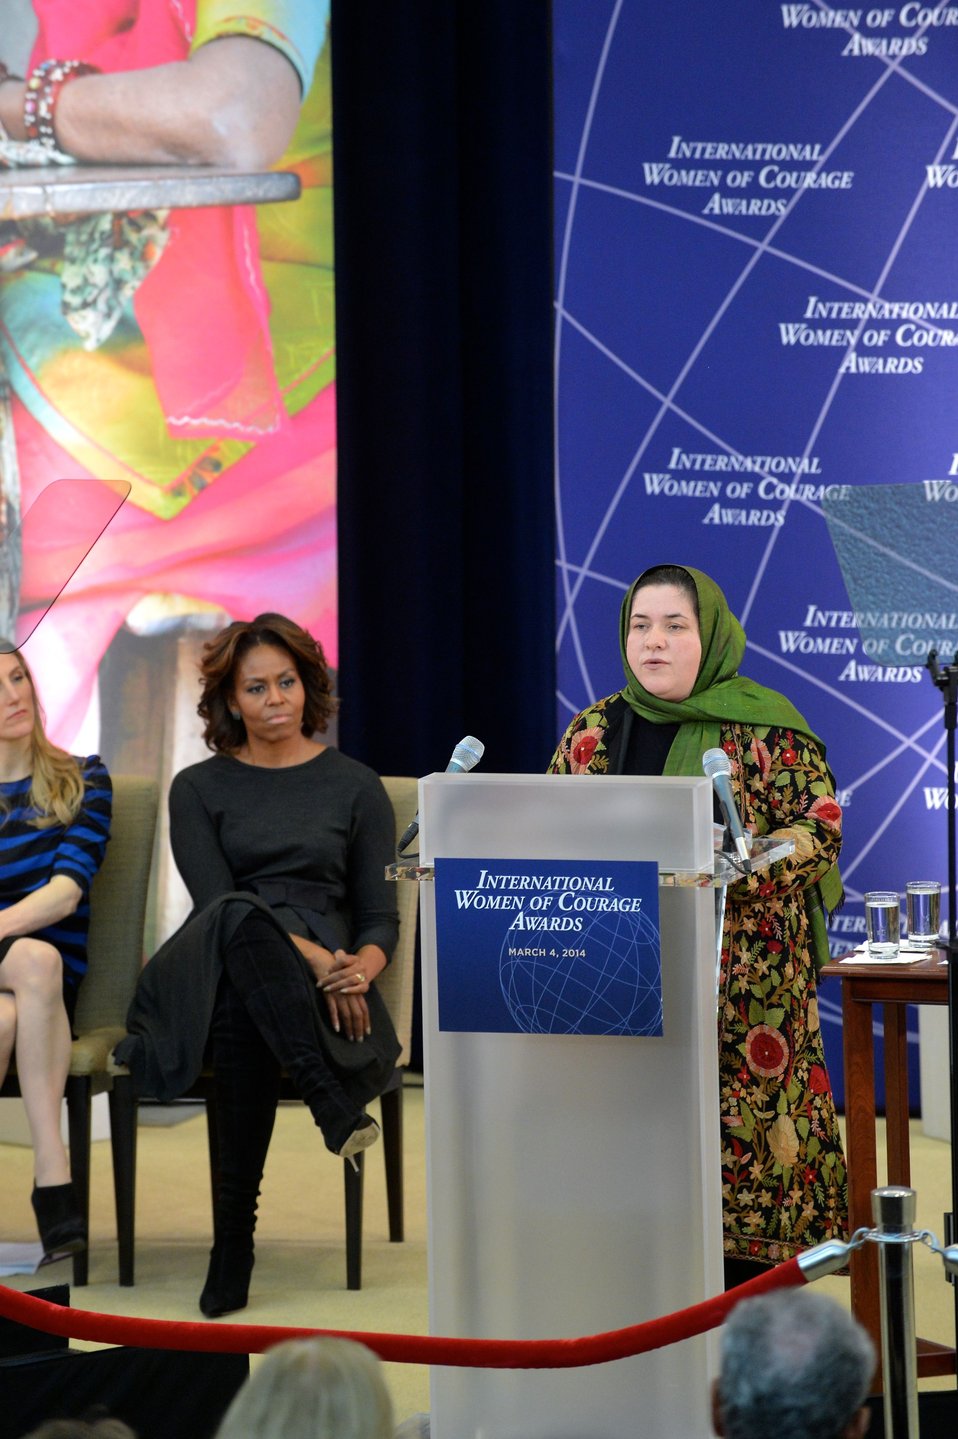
2014 IWOC Awardee Dr. Oryakhil of Afghanistan Delivers Remarks

With First Lady Michelle Obama looking on, 2014 International Women of Courage Awardee Dr. Nasrin Oryakhil, Director of Malalai Maternity Hospital in Kabul, Afghanistan, delivers remarks at the 2014 Secretary of State’s International Women of Courage Award Ceremony at the U.S. Department of State in Washington, D.C., on March 4, 2014.